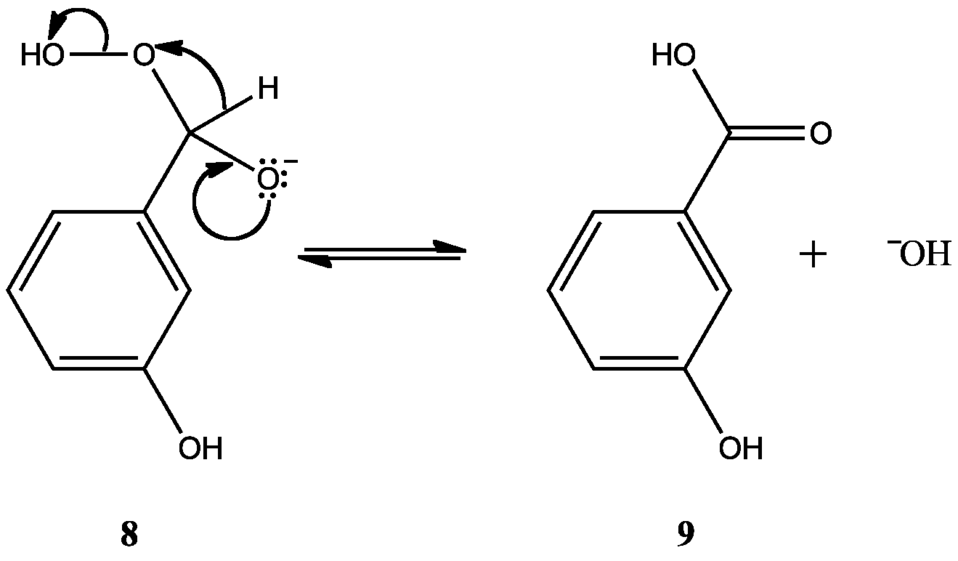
Created by Alexander Linsalata, 27 April 2010. Image shows the production of an aromatic carboxylic acid during the Dakin reaction due to a H shift, rather than an aryl shift.